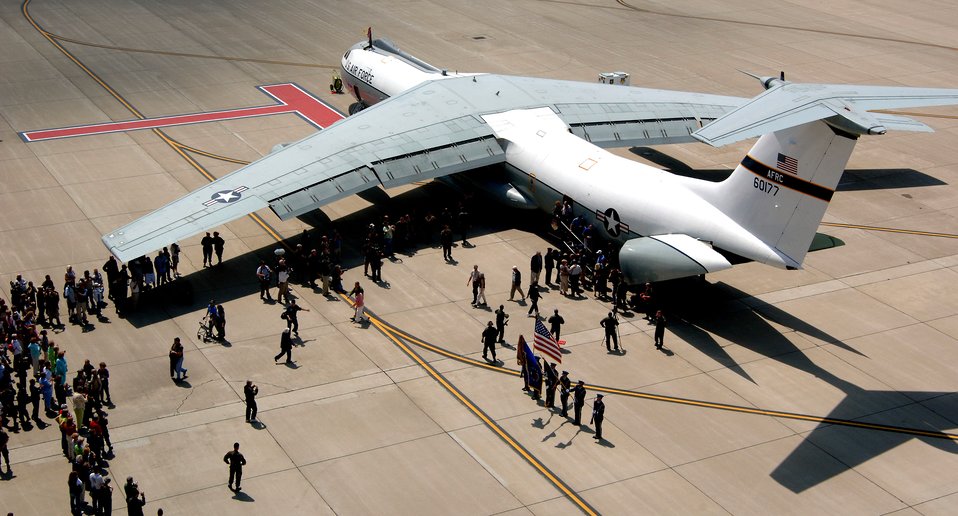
'Hanoi Taxi' arrives at National Museum of the Air Force

Families swarm to greet former prisoners of war moments after they landed in the C-141